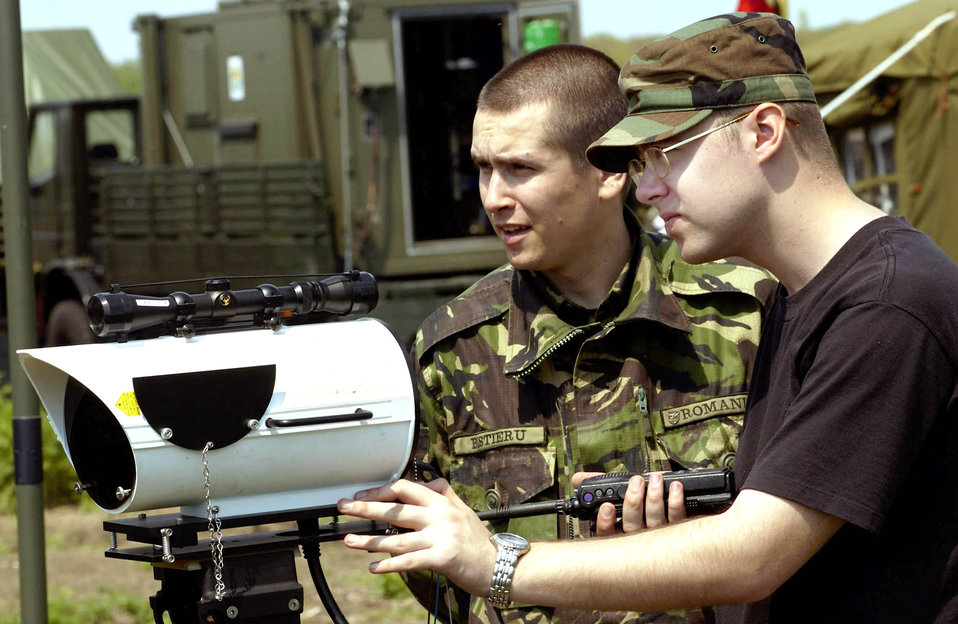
Strong endeavors

MIHAIL KOGALNICEANU AIRFIELD, Romania -- Airman 1st Class Ian Hoagland (right) talks with Romanian air force Pvt. Ciprian Bistieru about setting up a laser module that will be used for high-speed voice and data transmission here. During exercise Combined Endeavor 2005, Airmen with the 1st Combat Communications Squadron from Ramstein Air Base, Germany, prepared communication equipment to test the interoperability of command, control, communications and computer systems among 1,200 servicemembers and civilians from more than 43 countries. The Airmen successfully completed more than 1,400 tests.